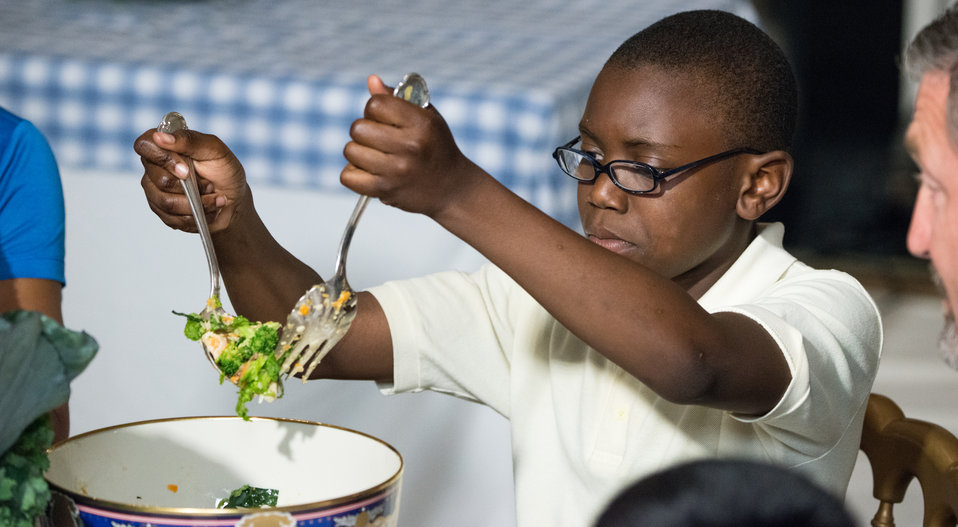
Jerry Womack has a second helping of a White House home grown garden salad while having lunch with First Lady Michelle Obama in the White House State Dining Room, in Washington, D.C. on Thursday, Jun. 12, 2014. Jerry is one of the Washington, D.C. students who helped plant the White House Kitchen Garden in the spring, and now enjoys the summer harvest of the crop.